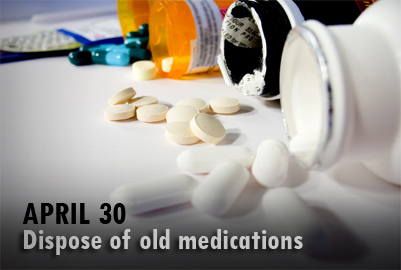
National Medication Take Back Day